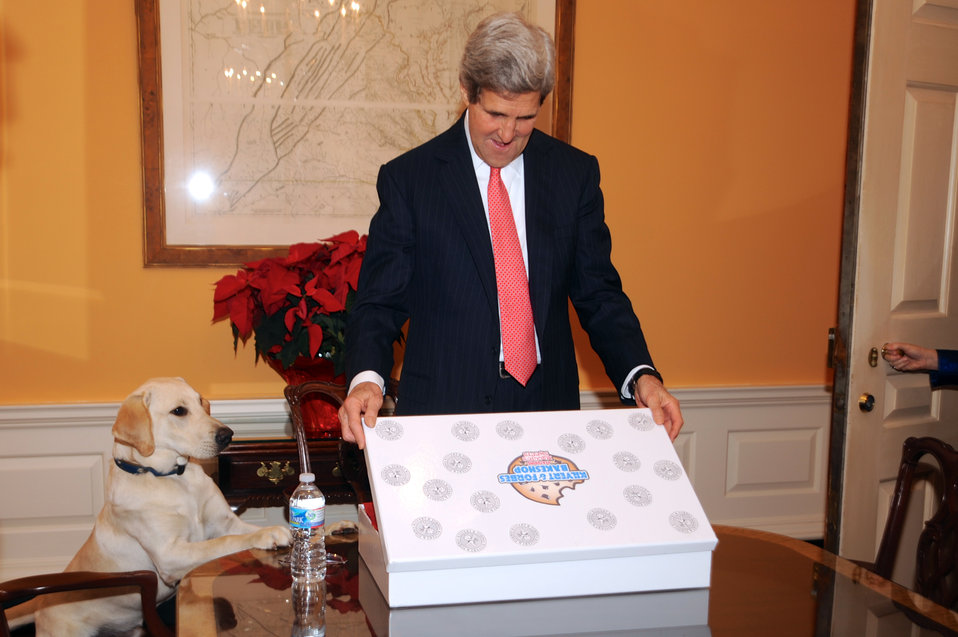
Celebrating Secretary Kerry's 70th Birthday With Cookies

In honor of his 70th birthday, U.S. Secretary of State John Kerry, accompanied by his dog Ben, receives a box of Kilvert and Forbes Bakeshop cookies from his staff at the U.S. Department of State in Washington, D.C., on December 11, 2013. In 1976, the Secretary, a chocolate lover, and his friend and business partner K. Dunn Gifford founded the Boston bakery and named it after their mothers. Though the Secretary is no longer at Kilvert and Forbes, he still loves chocolate.